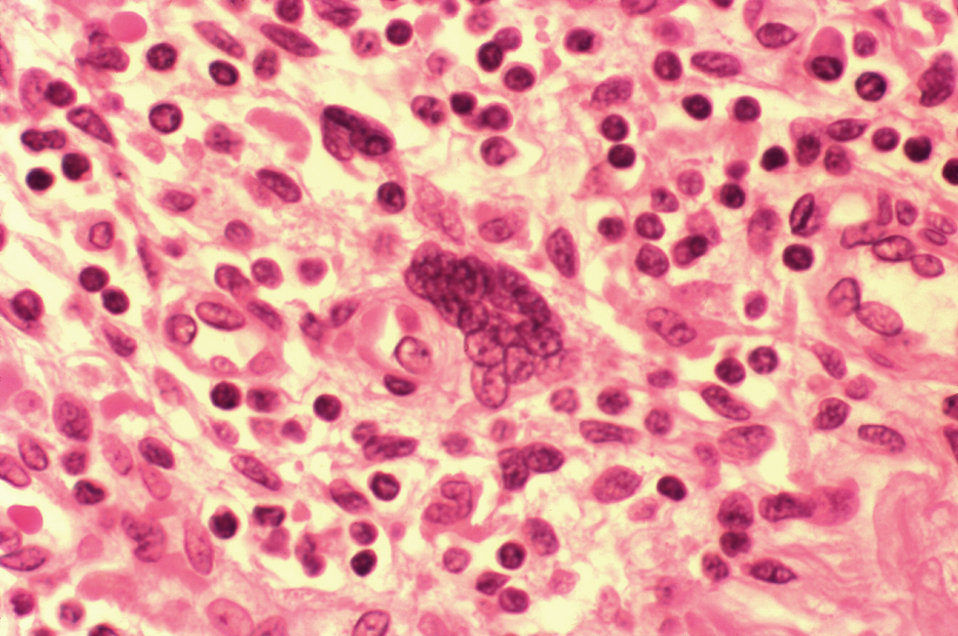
Histopathology showing multinucleated lymphocyte in lymph node of patient who died of AIDS.